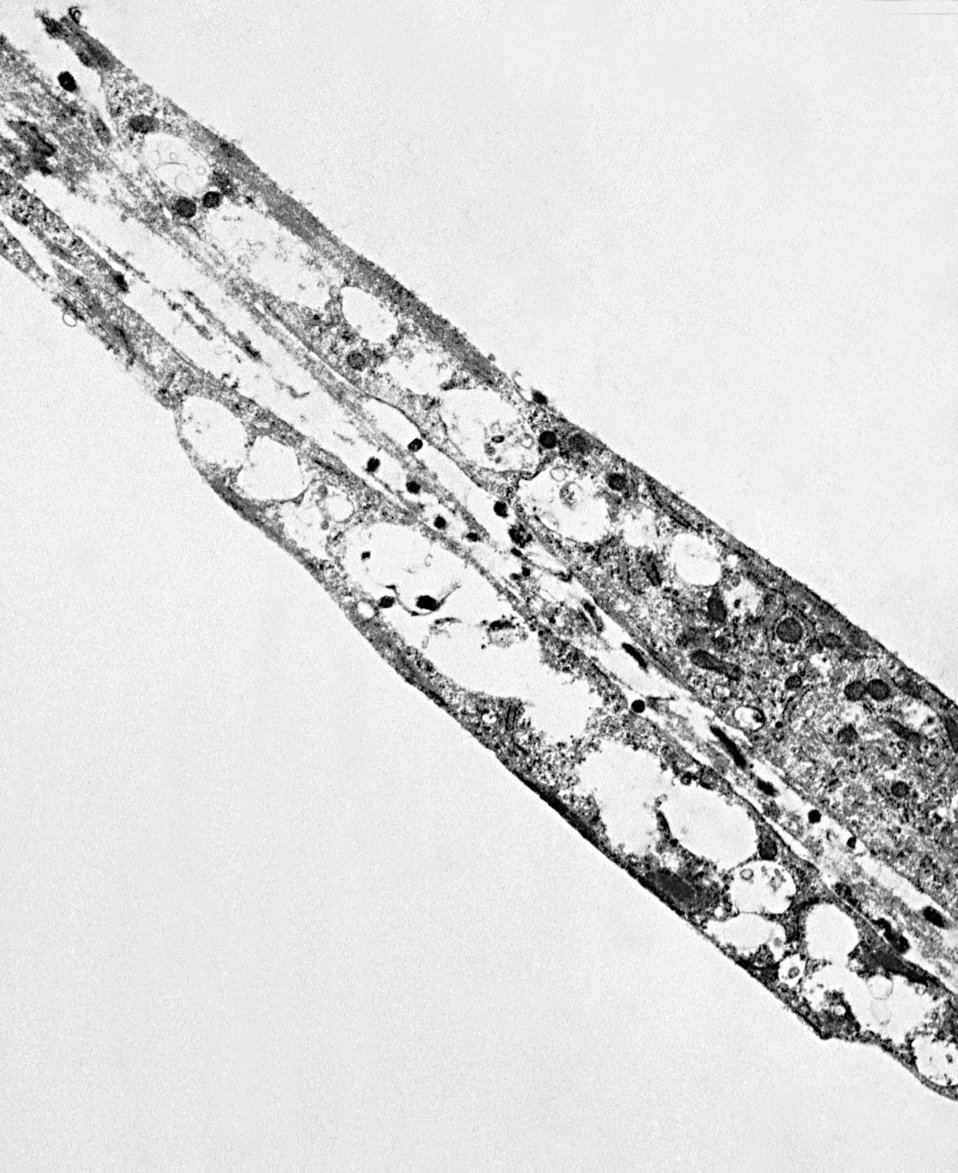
Electron micrograph of Treponema pallidum on cultures of cotton-tail rabbit epithelium cells (Sf1Ep).